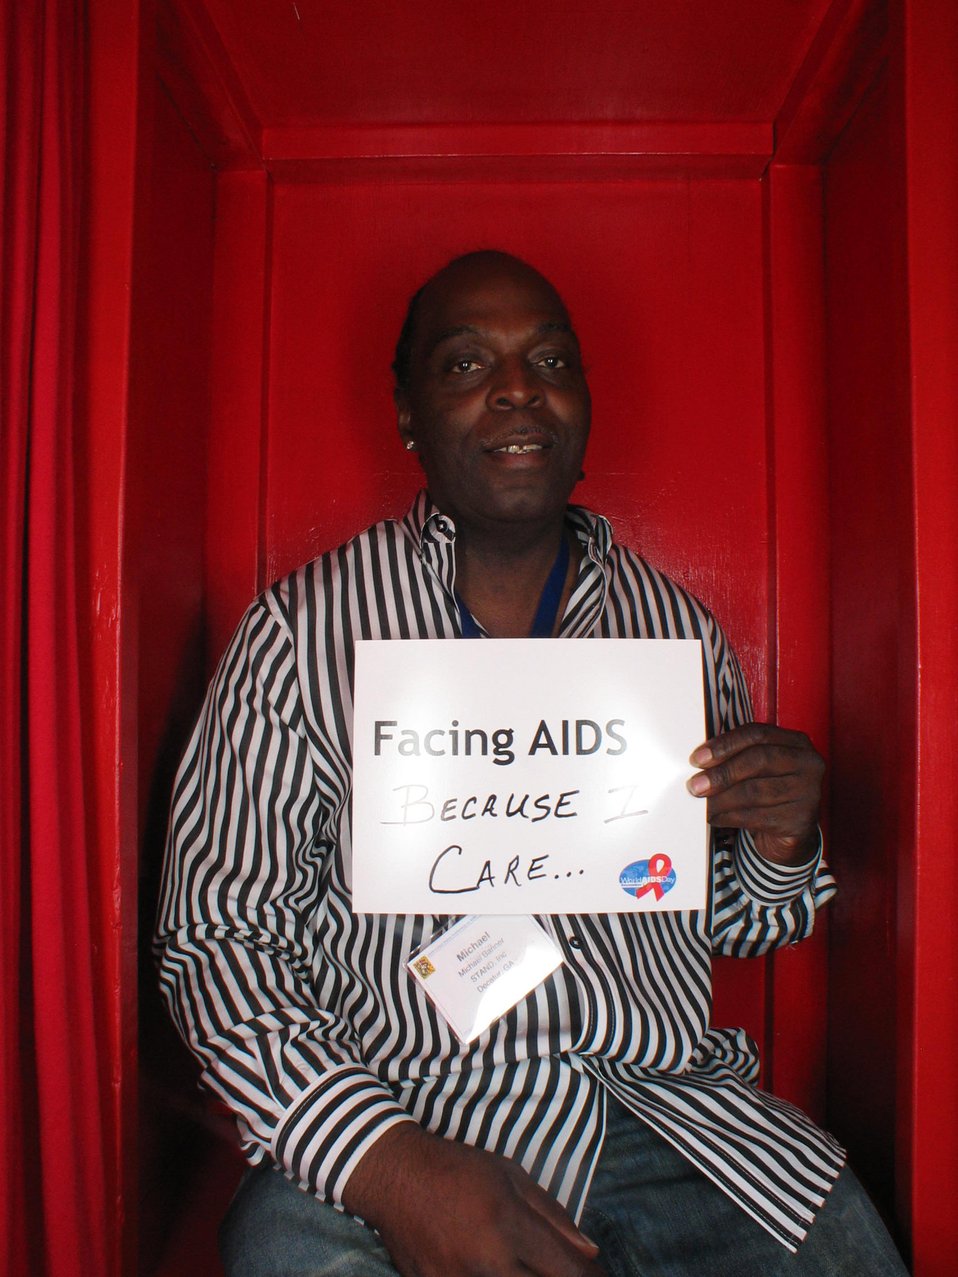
Facing AIDS because I care...